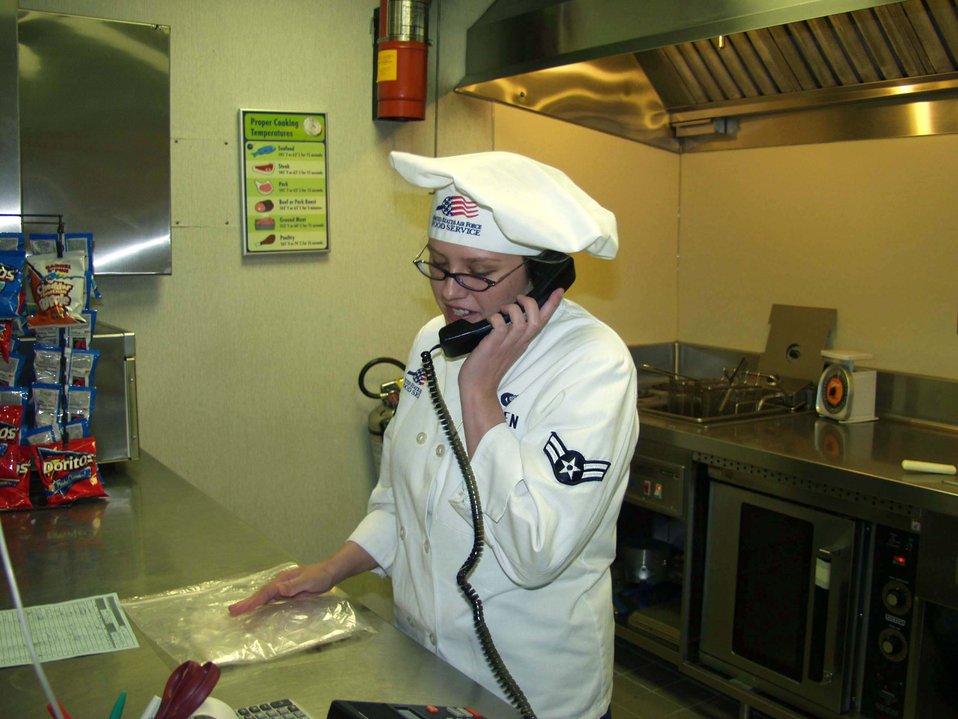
Airmen run missile-alert facilities

GREAT PLAINS OF NORTH DAKOTA -- Airman 1st Class Valarie Whalen takes a lunch order from a security forces Airman deployed to the field with her. Airman Whalen prepares four meals a day at Kilo-1, the missile-alert facility where she is assigned. She is also responsible for keeping the kitchen stocked and knowing how many supplies must be ordered. She is a 742nd Missile Squadron chef.